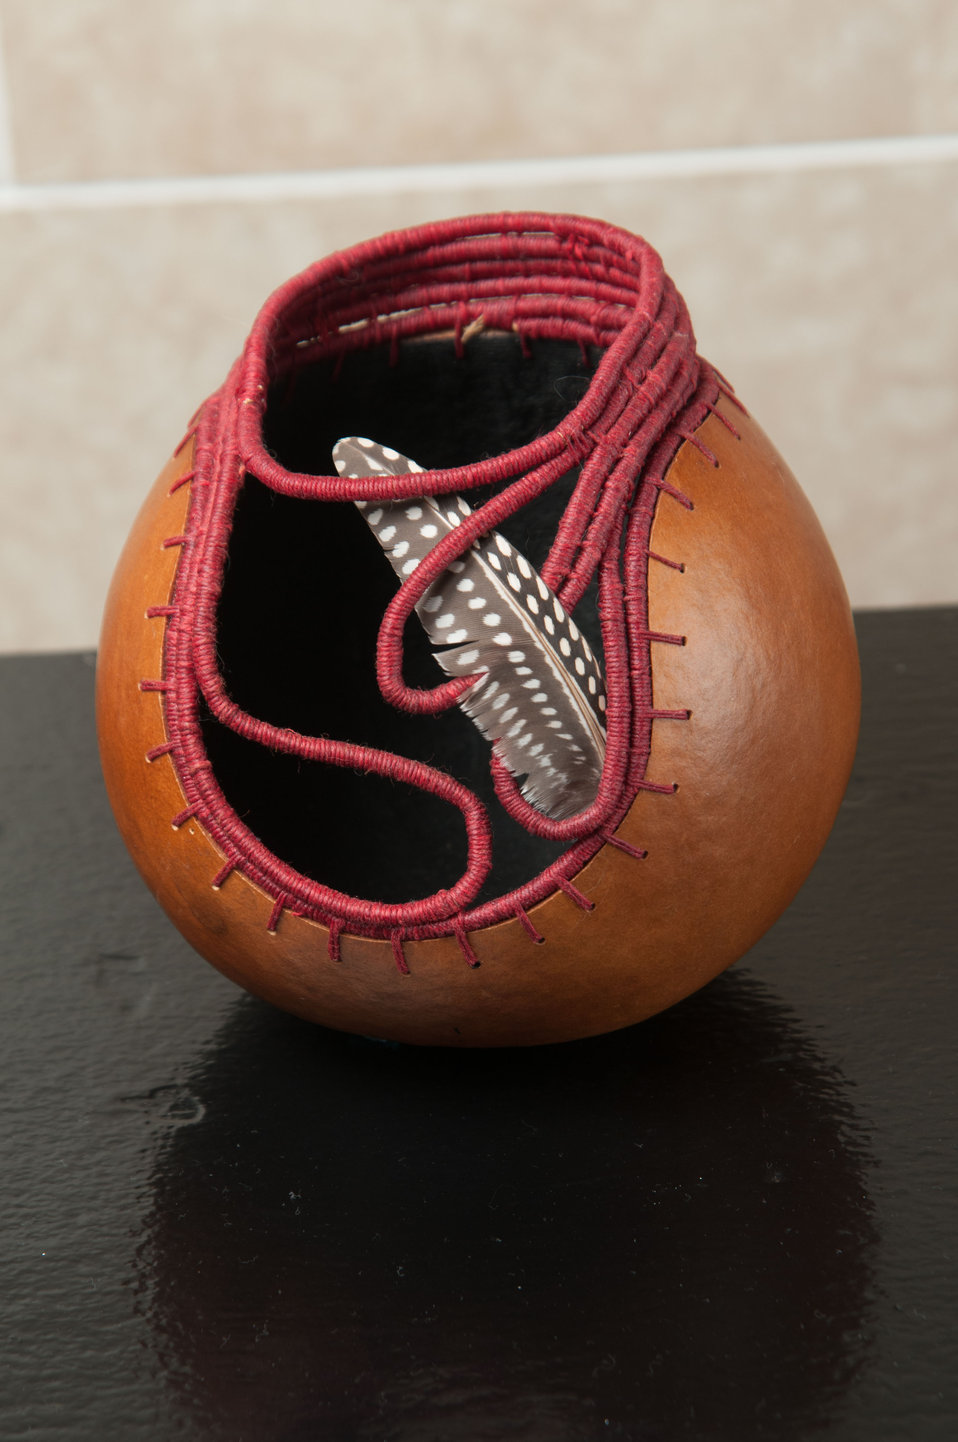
Online Viewer's Choice entries of the 2013 Art & Agriculture, Tuesday, July 9, 2013, in the South Building, Washington, D.C. Themes were expressed by employees from across the department and the contest was open to full-time and part-time USDA employees. Winning artwork will be displayed till the end of the year. U.S. Artistic expression is a creative outlet that is vital for an individual to grow and develop.